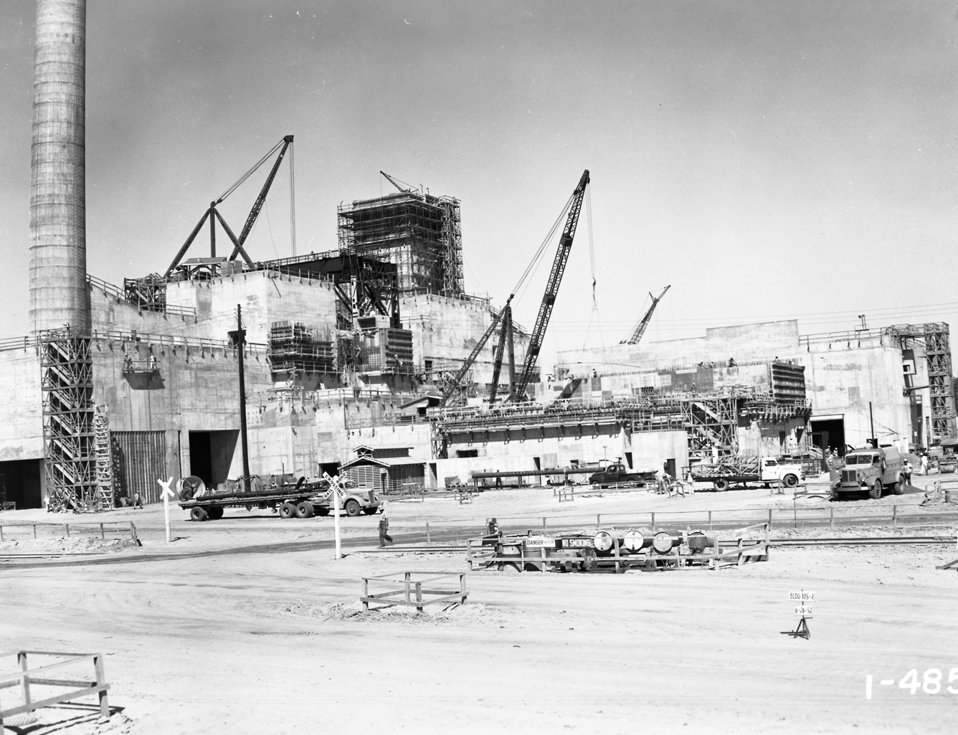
Historic P and R Reactor Photos - Savannah River Site

These photos from the 1950s show the construction of Savannah River Site’s P and R Reactors, as well as activities at the reactors once they became operational that decade. Each of the reactors, which formerly produced nuclear materials, occupies more than 300,000 square feet of space.